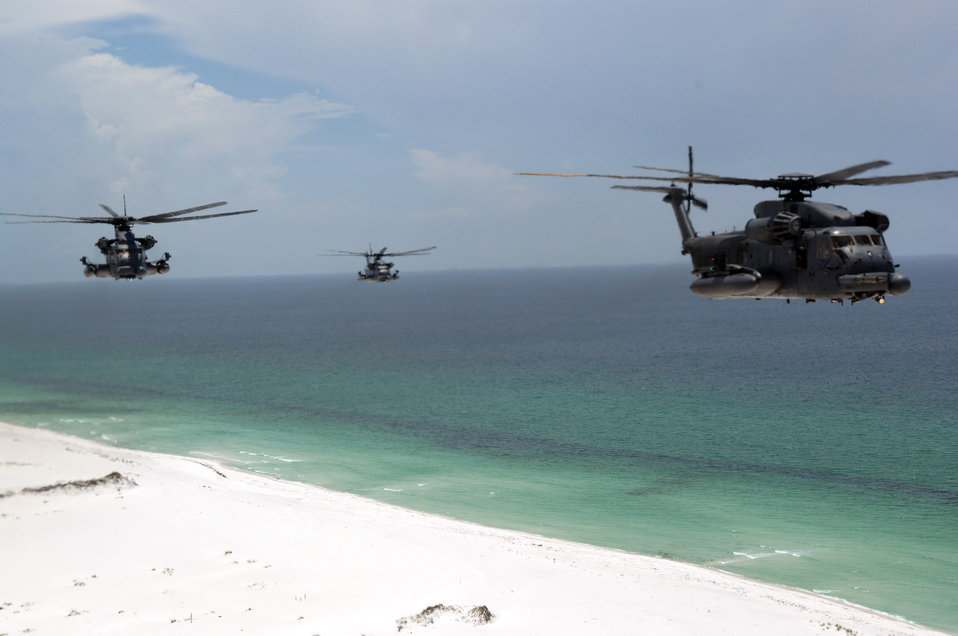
Fly high, pave low

MH-53 Pave Low helicopters from the 20th Special Operations Squadron at Hurlburt Field, Fla., fly over a live-fire range June 12 at Eglin Air Force Base, Fla. The medium-lift helicopter is the largest, most powerful and technologically advanced helicopter in the Air Force inventory.